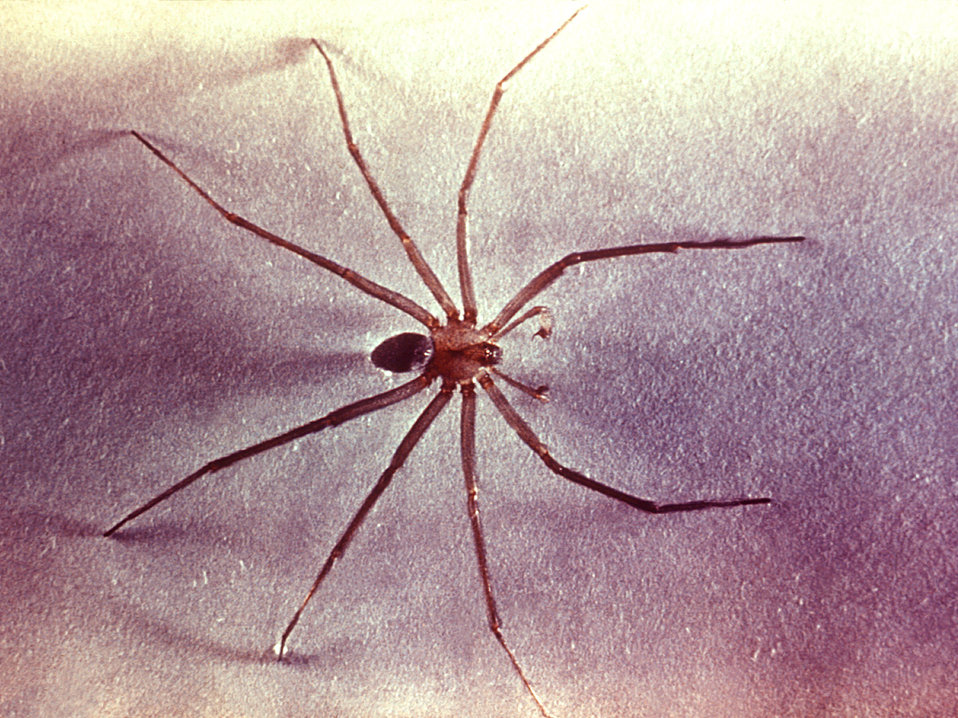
This image depicts a dorsal view of the large (25mm) Chilean recluse, Loxosceles laeta spider.